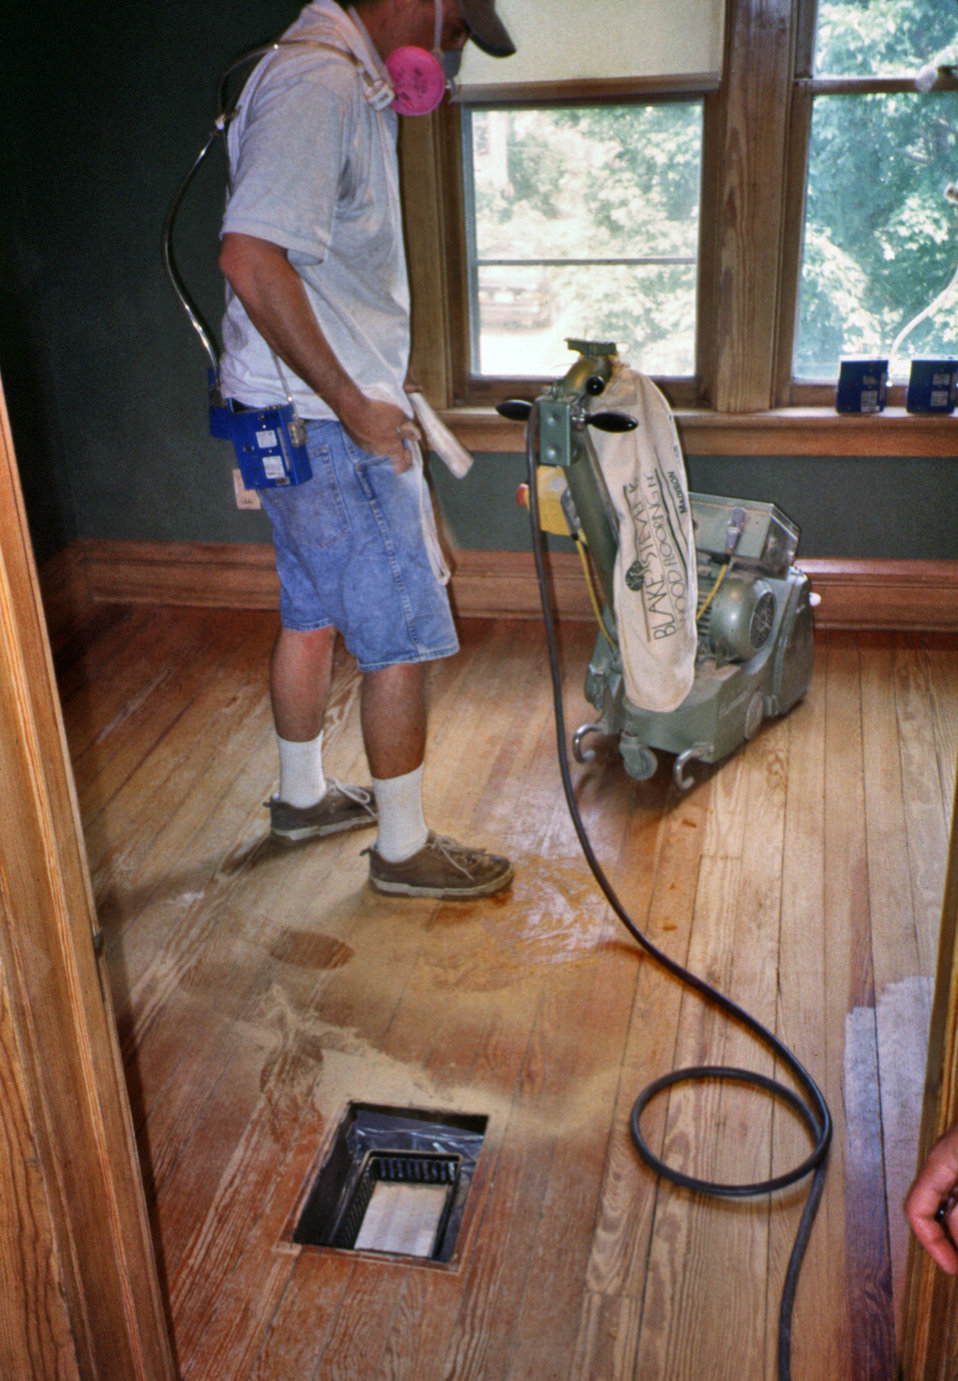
This 2000 photograph depicted a worker as he rough sanded a hardwood floor in a home in Madison, WI in preparation of refinishing its lead-based varnish surface.